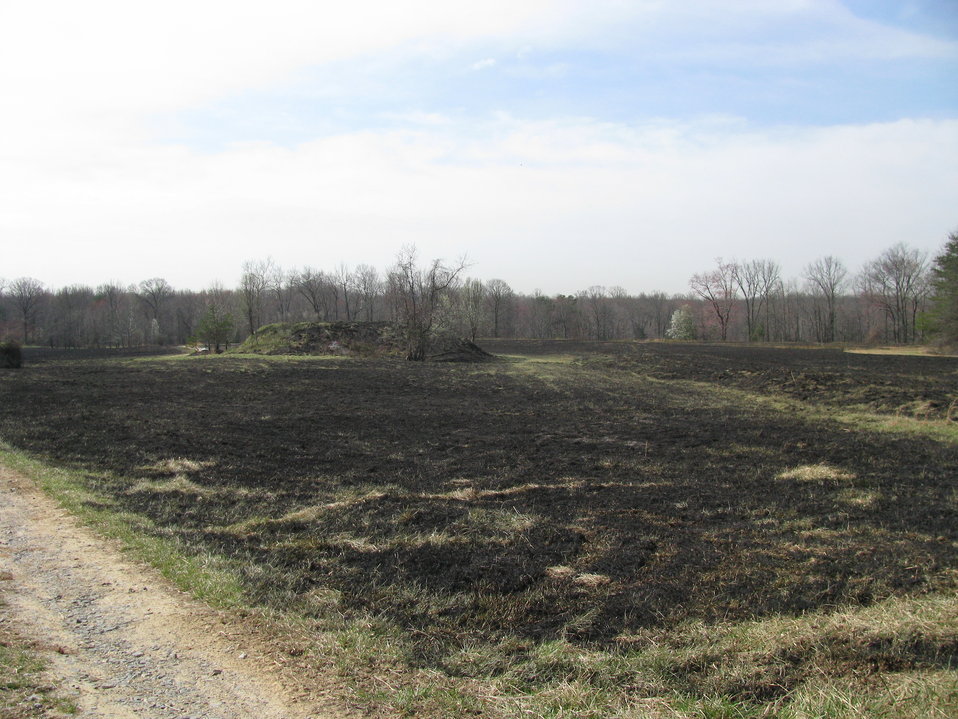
Controlled Burn Maintains Field

Laurel, Maryland, April 15, 2012:
This field near Blue Heron Pond recieved a controlled burn treatment the day before the photo was taken. The burn, at Patuxent Research Refuge, was to maintain native grasslands, remove woody vegetation, and control invasive species such as Korean Lespedeza.